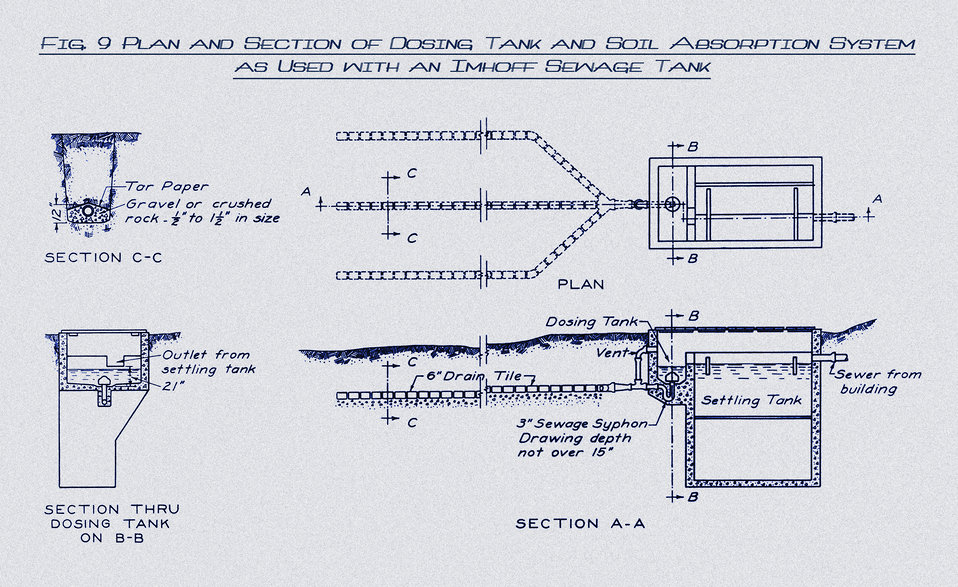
This historic diagram, which had been digitally enhanced and colorized, depicted an Imhoff sewage treatment tank from a number of anterior cross-sectional perspectives, which revealed the tank's chambers. It also explained the capacity of this design to serve the needs of pupils at an average public school in Minnesota. The Imhoff tank was a chamber created to receive, and process raw sewage. At its essence, it was a two-story septic tank. It collected sewage in the upper chamber in which sedimentation took place. The solids fell down sloped inclines to a bottom chamber in which the sludge was collected and digested by bacteria.